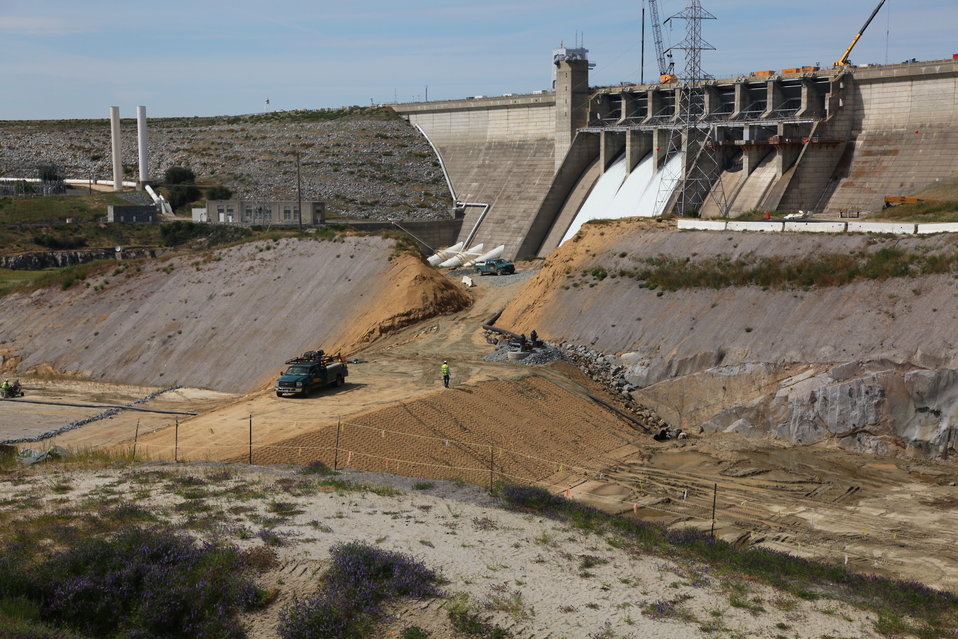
Work continues on spillway control structure at Folsom Dam

FOLSOM, Calif. (April 28, 2011) – Excavation work for the control structure of the auxiliary spillway – part of the third phase of the Folsom Dam Joint Federal Project (JFP) – continued here April 27. Ongoing work for the JFP at Folsom Dam will require daily explosive blasting until October of this year, said David Neff of the U.S. Army Corps of Engineers Sacramento District’s engineering division. For the public’s safety, the Folsom Lake Crossing roadway and bridge are closed Monday through Friday from 1:30 p.m. to 2:30 p.m. during blasting.